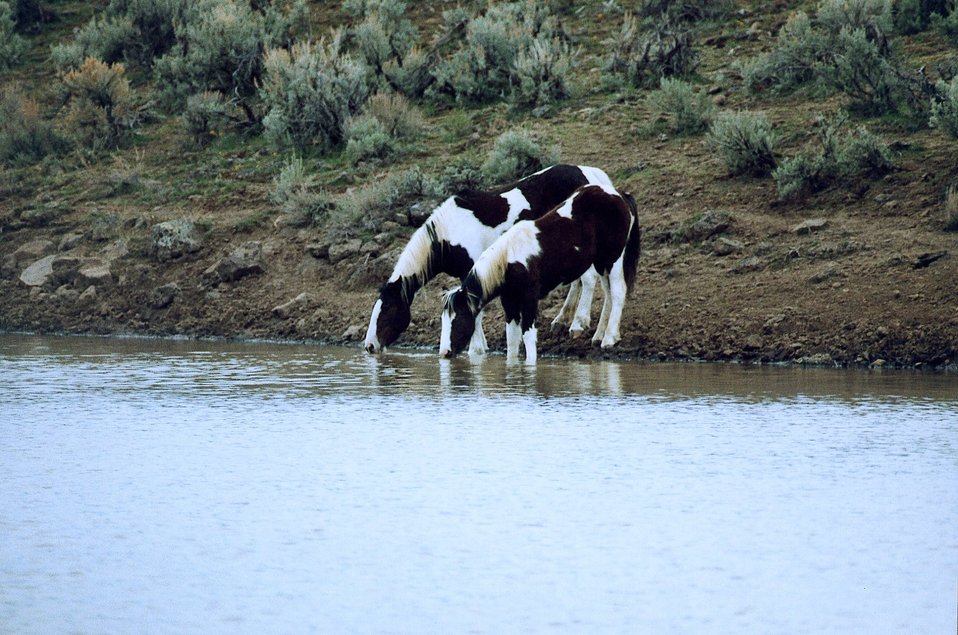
Medium shot of mare and her colt drinking from a South Steens Livestock Resevior.